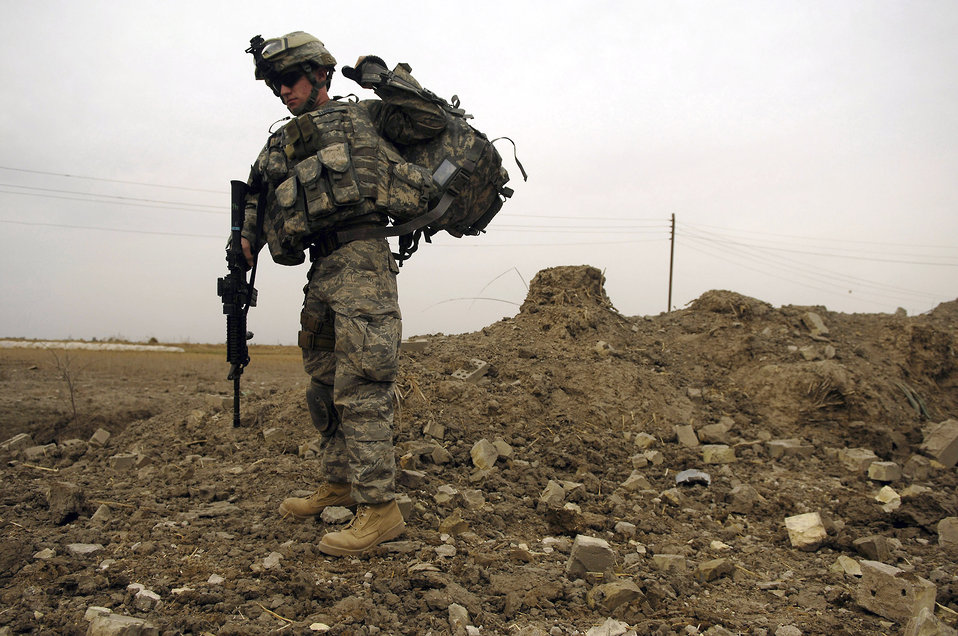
B-1B destroys al-Qaida torture compound in Iraq

Airman 1st Class Daniel String puts his radio and gear on after a B-1B Lancer successfully dropped six GBU-38 munitions onto an al-Qaida torture house and prison March 10 in northern Zambraniyah, Iraq. Airman Aton is a joint terminal attack controller from Fort Drum, N.Y., and is deployed with the 3rd Infantry Division 2nd Brigade.